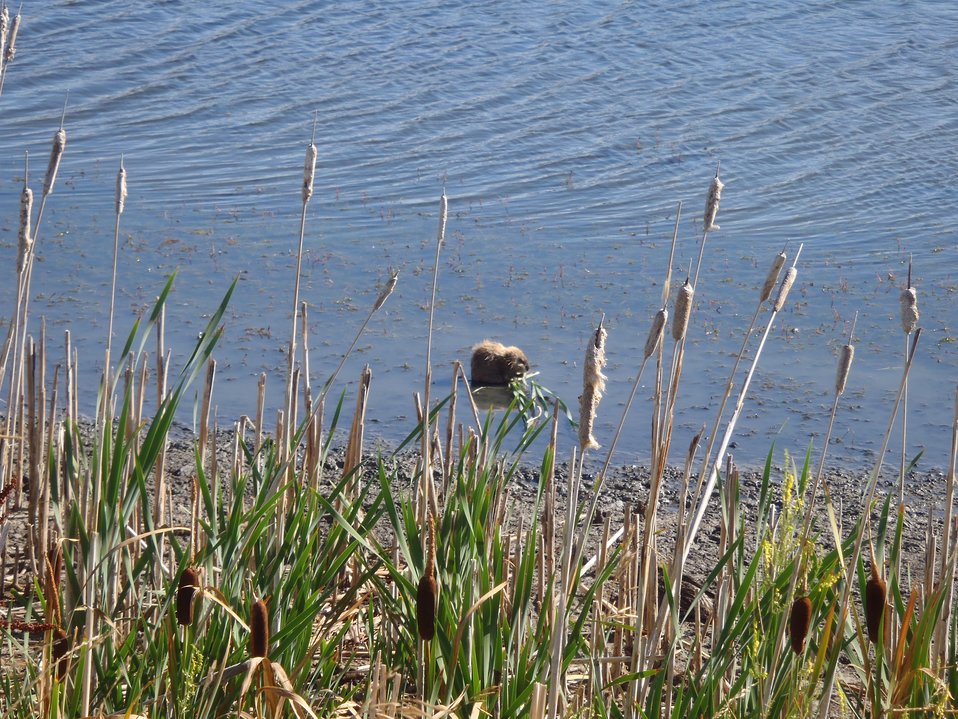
Muskrat (Ondatra zibethicus)

Muskrats are commonly mistaken for Beavers when swimming in the marshes of Benton Lake.